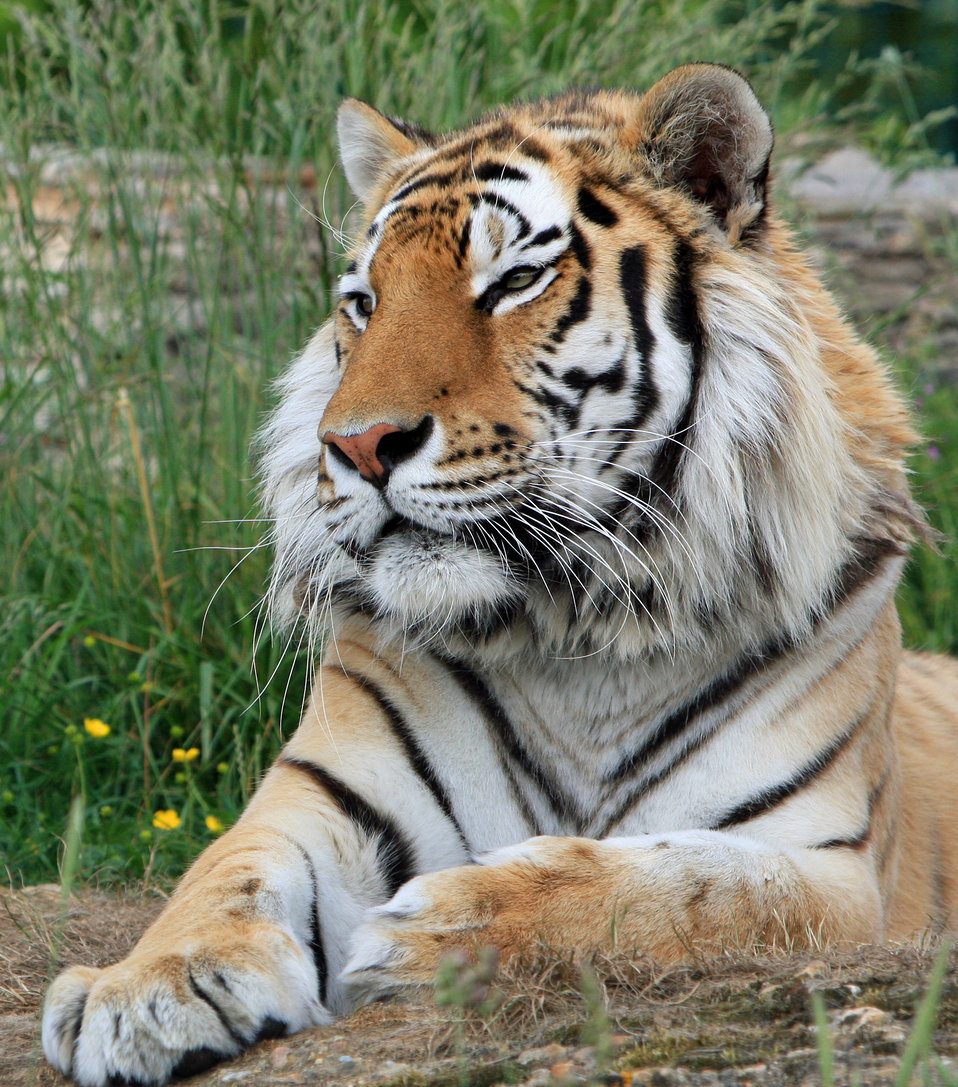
Tiger

Beautiful close-up portrait of a male siberian tiger resting.